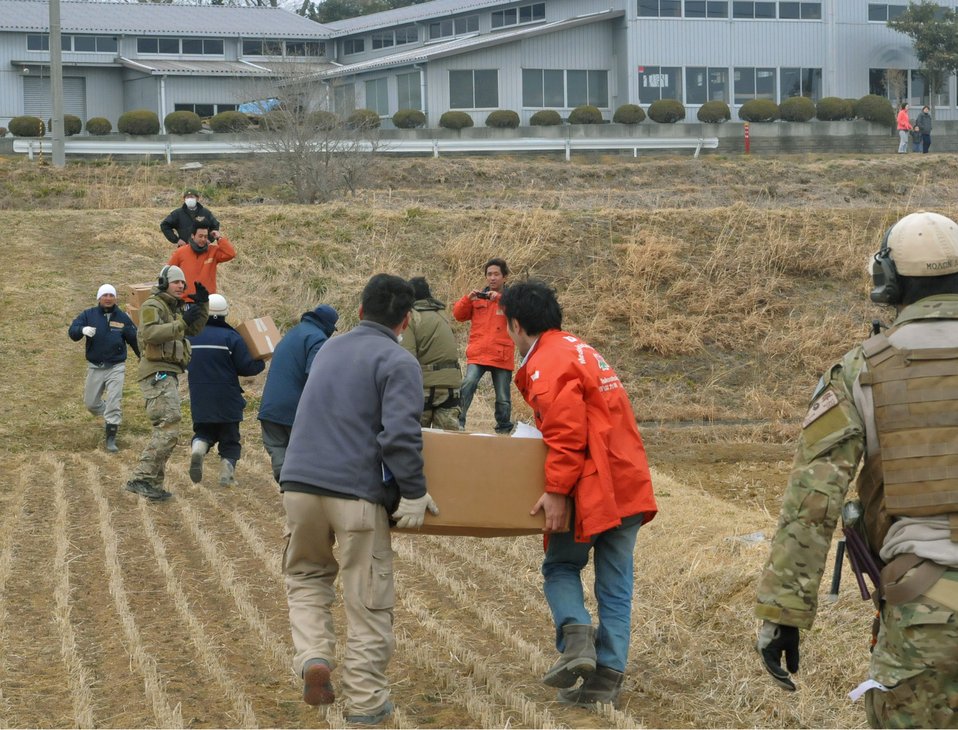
Supporting Operation Tomodachi

Airmen work alongside Japanese medical workers to unload food, water and medical supplies from two HH-60 Pave Hawks, March 20, 2011, in Kessenuma City, Japan.